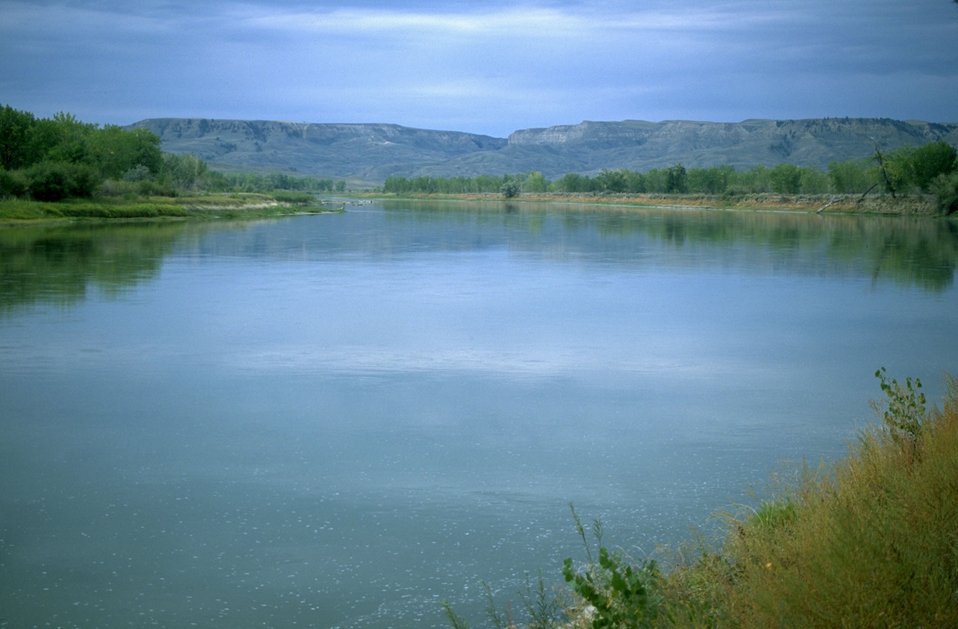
Upper Missouri River